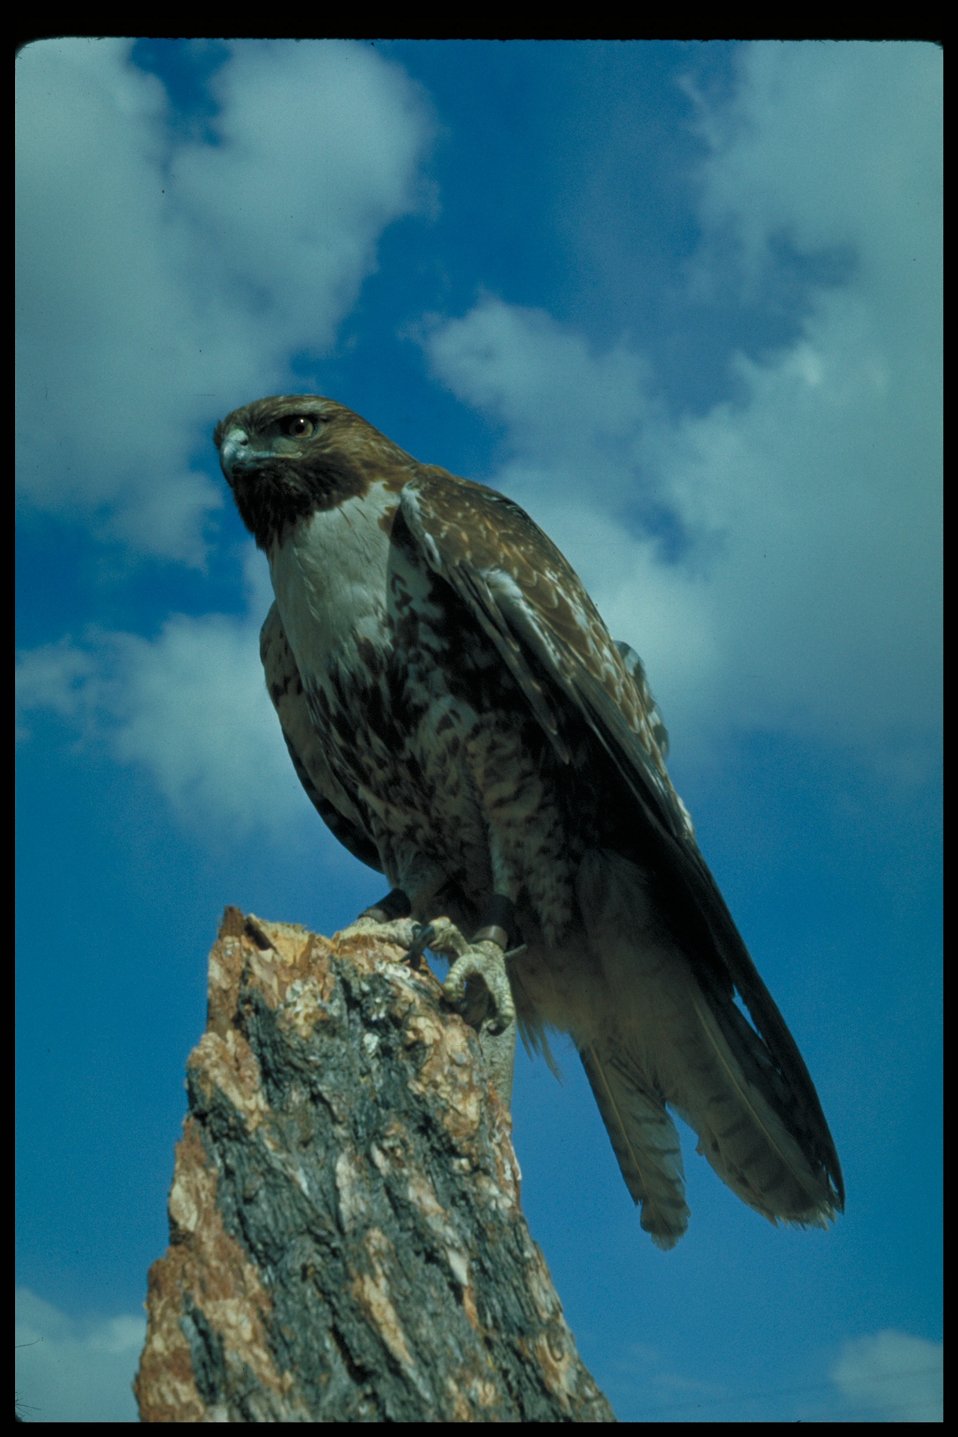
Red-Tailed Hawk Birds of Prey National Conservation Area BOP Owyhee Field Office LSRD Lower Snake River District